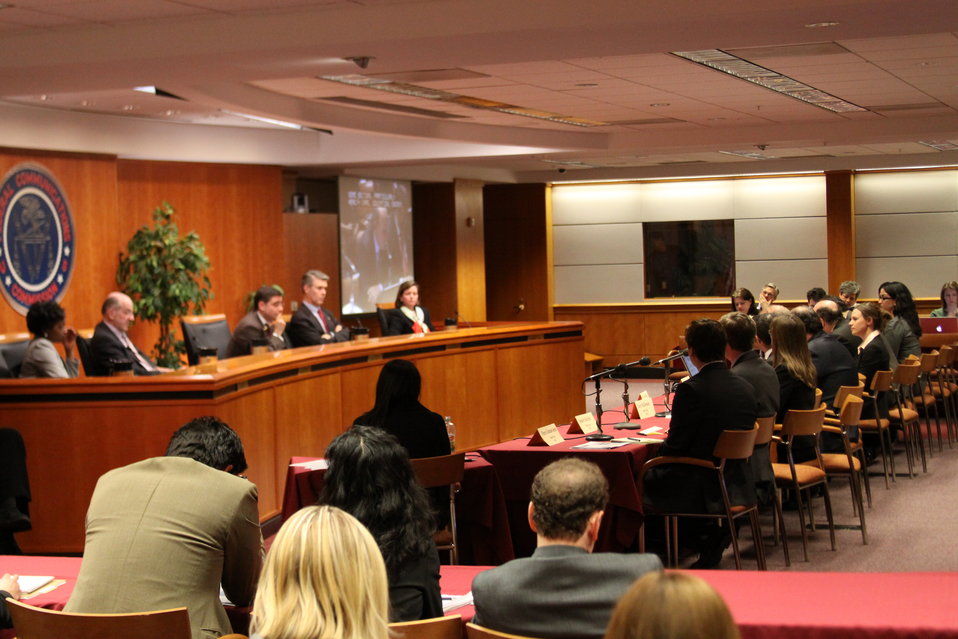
Open Commission Meeting - 2/18/2010

The Federal Communications Commission will hold an Open Meeting in Washington, DC. on February 18, 2010, which will include the following items:

E-Rate: An Order and Notice of Proposed Rulemaking to enable schools that receive funding from the E-Rate program to allow members of the general public to use the schools' Internet access during non-operating hours at no additional cost to the Universal Service Fund. This order and notice do not permit or require any changes to E-Rate applications due on February 11, 2010; Ex Parte Reform: A Notice of Proposed Rulemaking to improve the transparency and effectiveness of the FCC's decision-making process by reforming the ex parte rules; Procedural Reform: A Notice of Proposed Rulemaking to enhance the efficiency, openness, and transparency of the Commission's proceedings by improving and modernizing certain organizational and procedural rules; National Broadband Plan Status Report: Commission staff will report on the status of the National Broadband Plan, providing a framework for the national purposes portion of the Plan.